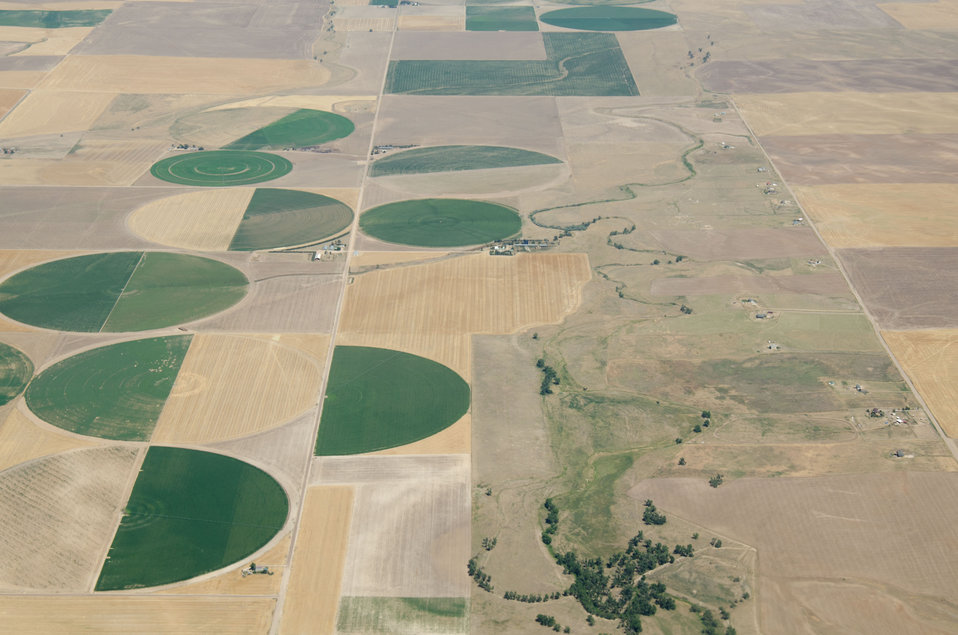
Aerial views of drought affected Colorado farm lands, 83 miles east of Denver, Colorado on Saturday, July 21, 2012. Green areas are irrigated, the yellow areas are dryland wheat crops.